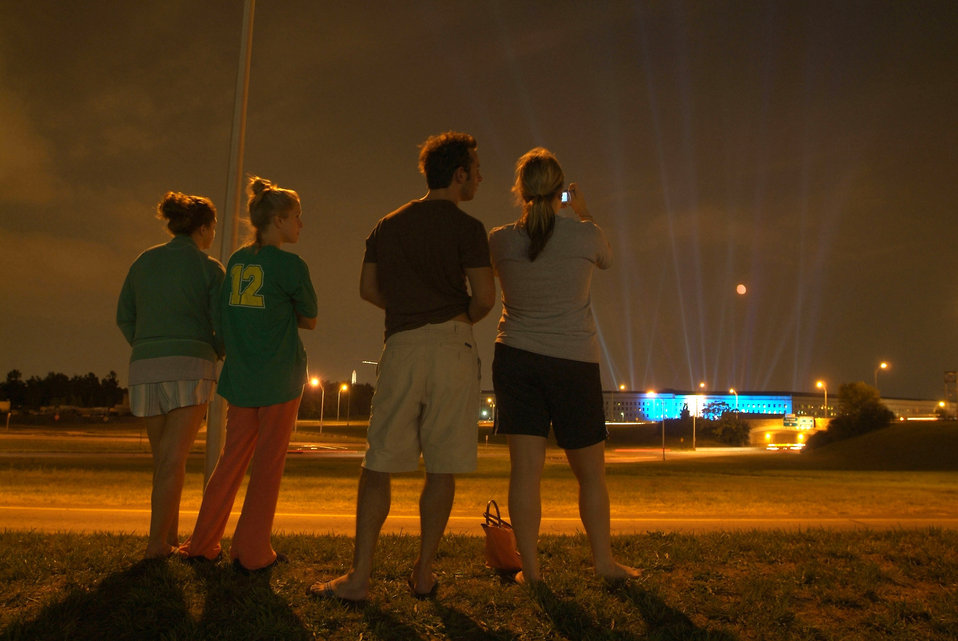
Beams of light honor those who died at Pentagon

Arlington, Va., resident Allison Bacon (right), who works for Navy Facilities Engineering Command at the Washington Navy Yard, takes a picture of the 184 beams of light emanating from the Pentagon courtyard as Hillary Hout (from left), Melissa Twardzik and Chris Tassa look on. The lights commemorate each life lost during the Sept. 11, 2001, attack on the Pentagon.